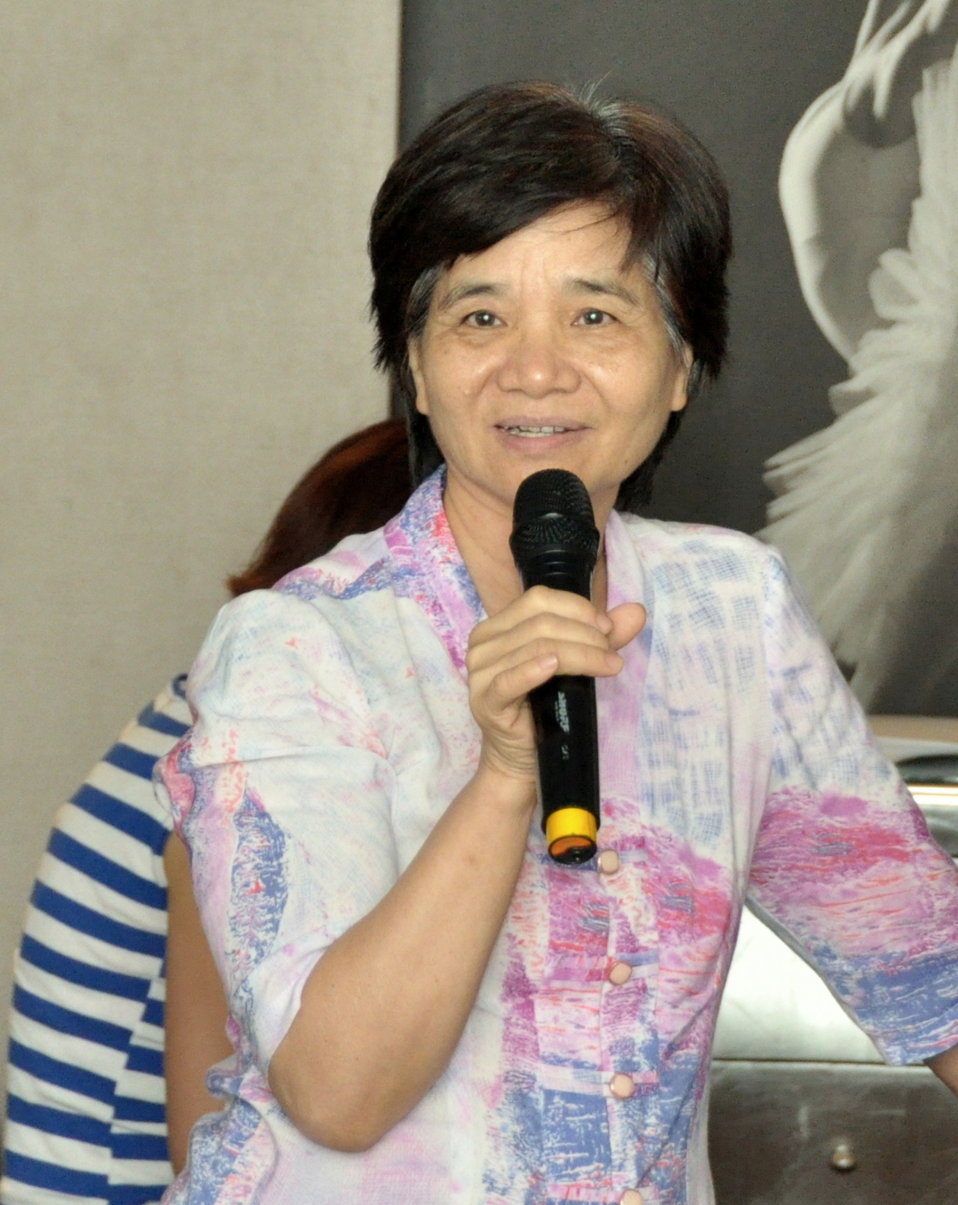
Mrs. Le Thi Lan, Director of Community Financial Resource Center, speaks at the completion event.

Hanoi, June 20, 2013.